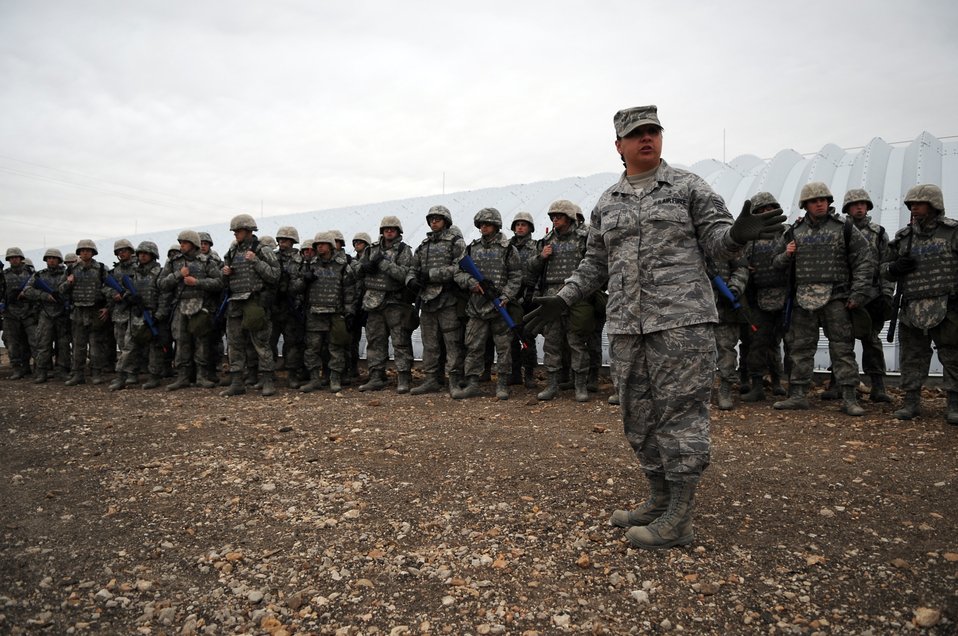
Trainees slew the BEAST in new basic training program

Airmen Basic trainees in body armor wait their turn to go through an unexploded ordnance disposal training lesson taught by Tech. Sgt. Nicole Pino during the five-day deployment exercise called the Basic Expeditionary Airman Skills and Training, or BEAST, which kicked off Dec. 15 at Lackland Air Force Base, Texas. Sergeant Pino is a military training instructor for the 737th Training Support Squadron. The BEAST is the newly built complex added into the extended, 8.5-week Basic Military Training curriculum that began Nov. 5.